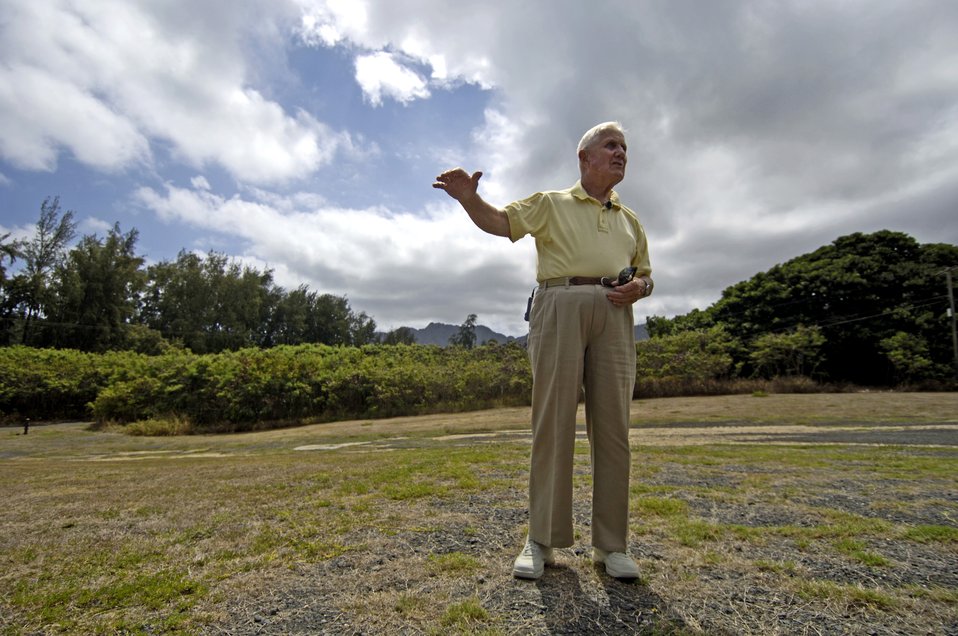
World War II veteran visits his past in Hawaii

Raymond Stehle explains where the headquarters building and tent city were located in 1941 at Bellows Air Force Station, Hawaii, during a visit Sept. 30. Mr. Stehle was stationed at Bellows Army Air Field when the Japanese attacked on Dec. 7, 1941.